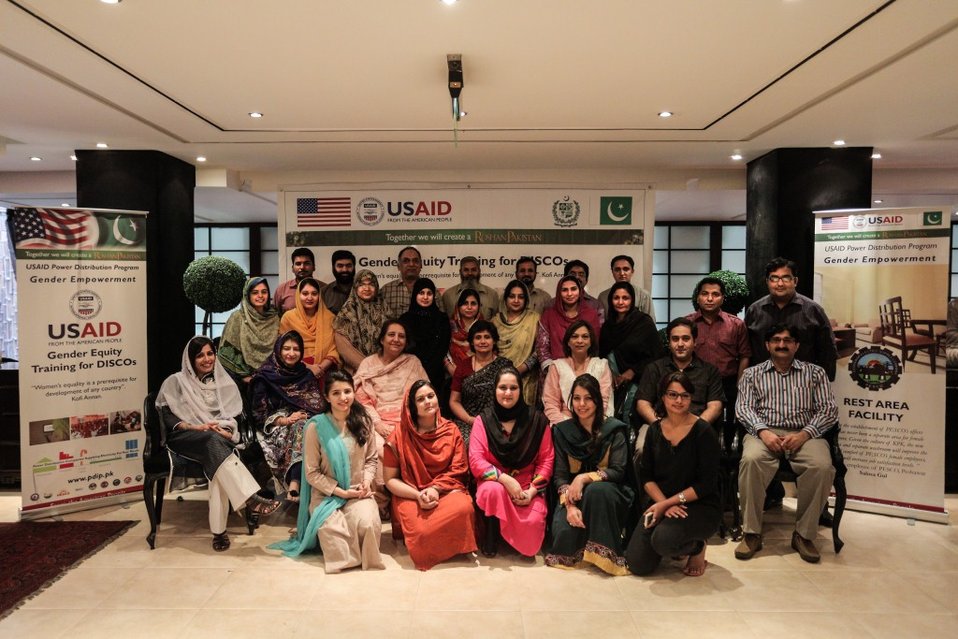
USAID conducts Gender Equity Training for LESCO Staff

“These trainings will pave the way for enacting a women-friendly environment that accepts women as assets and resources in the energy sector.”
USAID Power Distribution Gender Strategy Team Lead
Qurat ul ain Ibrahim

A Gender Equity Training (GET) session was completed at Lahore Electric Supply Company this month, reinforcing the role of women in the power sector. GET facilitates the development of a corporate strategy in three crucial areas: employment, workplace conditions and professional development. This training paves the way for enacting a women-friendly environment that accepts women as both assets and resources.